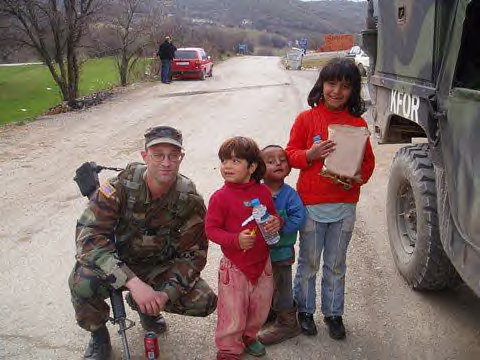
Ken McDonald -- Southeast Region

Ken McDonald.
.
Kenneth McDonald entered his initial military service with the United States Marine Corps in June, 1992. During his military career he has also served in the Tennessee Army National Guard, the Ohio Army National Guard, the United States Coast Guard Reserve, and the Tennessee Air National Guard. Trained initially as an infantryman, he has additionally served as a combat engineer, human intelligence collector (Arabic), marine science technician, and air transportation specialist. He currently serves in the Tennessee Army National Guard’s 1st Battalion, 181st Field Artillery as a HIMARS crewman. .
.
Over the course of his career he has served in the United States after 9-11 during Operation Noble Eagle and on numerous deployments to countries such as Spain, Italy, France, Germany, Turkey, Egypt, Somalia, Cuba, Japan, and Kosovo. He assumed his present duties as a Fish and Wildlife Biologist for the U.S. Fish and Wildlife Service’s Tennessee Ecological Services Office in Cookeville, TN in February, 2012. .
.
McDonald’s professional awards include: the Joint Meritorious Unit Award; two Army Reserve Components Achievement Medals; Marine Corps Good Conduct Medal; two National Defense Service Medals; the Armed Forces Expeditionary Medal; Kosovo Campaign Medal; Global War on Terrorism Service Medal; Armed Forces Service Medal; Humanitarian Service Medal; two Navy Sea Service Deployment Ribbons; the Armed Forces Reserve Medal with Mobilization device; Army Service Ribbon; Overseas Service Ribbon; United Nations Medal; NATO medal; and Tennessee National Guard Commendation Ribbon.